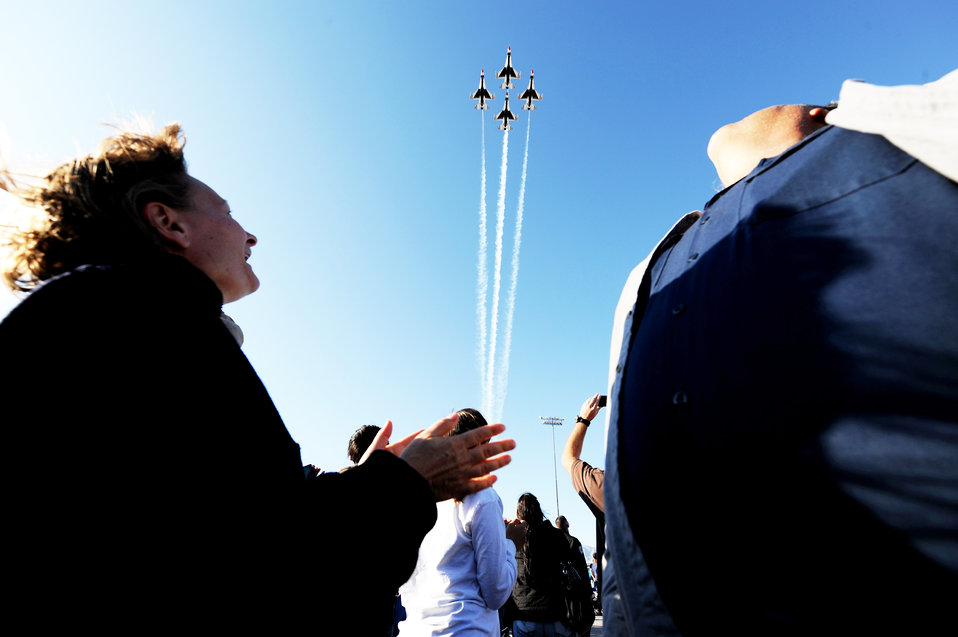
Thunderbirds close air show season

The U.S. Air Force Air Demonstration Squadron Thunderbirds fly over the audience during the Nellis Air Force Base, Nev., air show Nov. 14, 2009. The open house acts as the final air show of the year for the Thunderbirds.